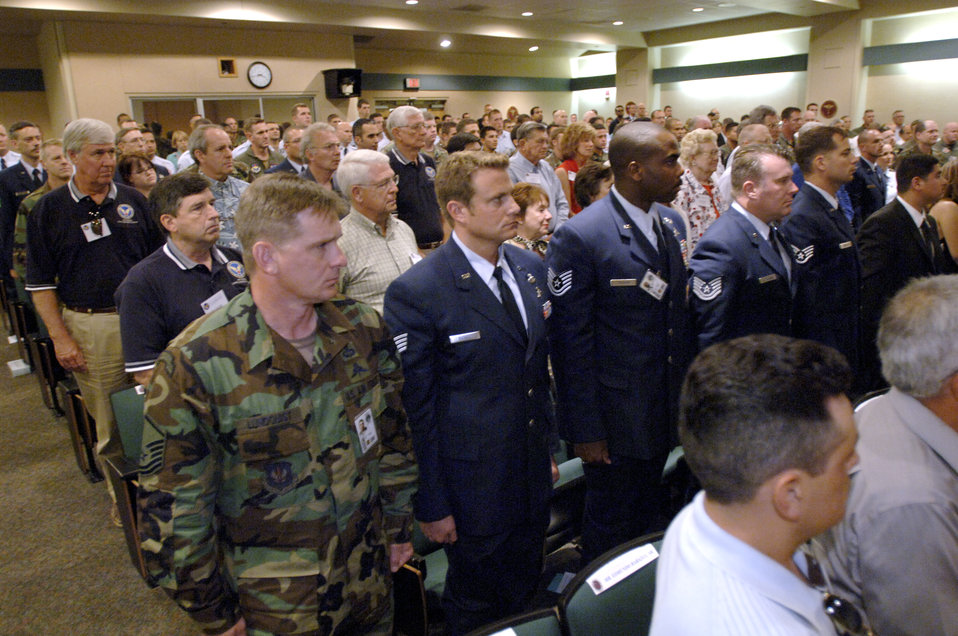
Purple Heart Presentation

More than 200 family, friends and fellow servicemembers crowd the Brooke Army Medical Center auditorium for a ceremony honoring Staff Sgt. Israel del Toro at Fort Sam Houston, Texas, today. Sergeant del Toro was presented the Purple Heart Medal from Air Force Chief of Staff Gen. T. Michael Moseley. Sergeant del Toro was wounded during combat action in Afghanistan in December 2005 while supporting Operation Enduring Freedom.